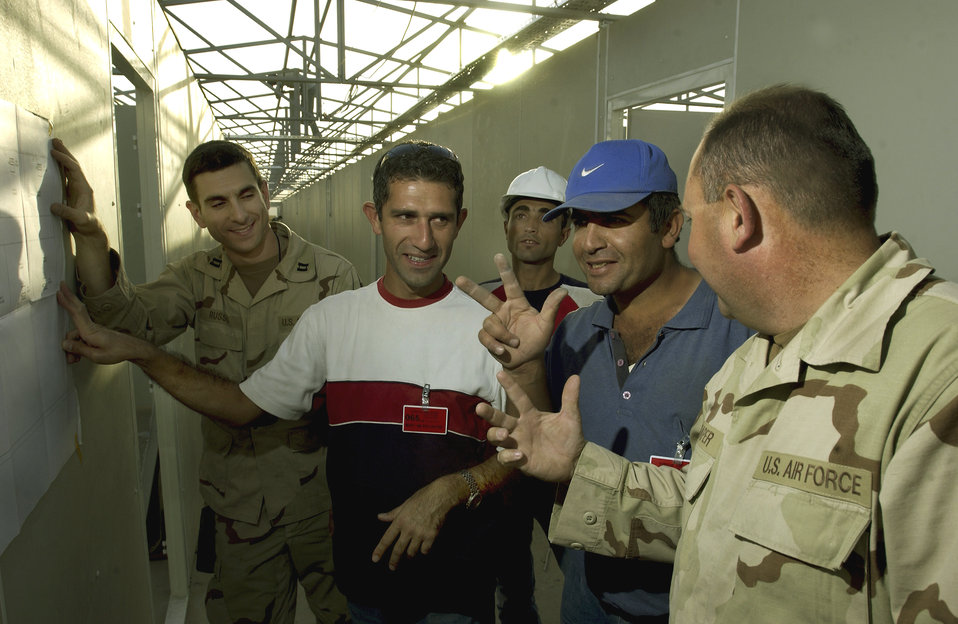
New dorms for airmen

KIRKUK AIR BASE, Iraq -- Capt. Robert Russo (left) and Tech. Sgt. Jerry Draper talk with contractors about safety requirements for new dorms being constructed here. The buildings are scheduled to open Dec. 1. They will house up to 1,664 airmen in 13 buildings with six to eight people to a room. Each dorm will feature its own latrine with 14 sinks, eight toilets and eight showers. Both airmen are assigned to the 506th Expeditionary Civil Engineer Squadron here.